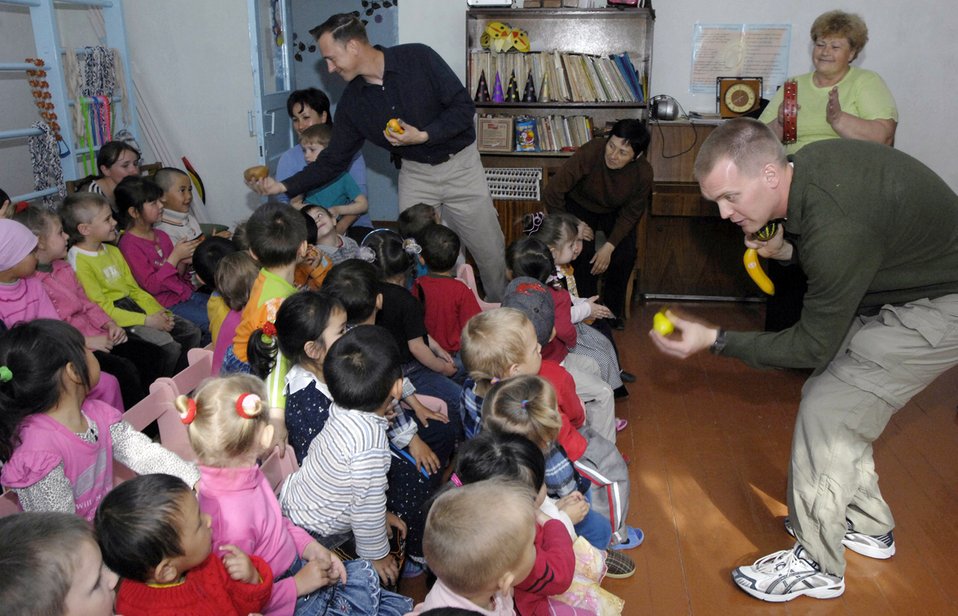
Band members connect with Kyrgyzstan music students

Staff Sgt. Peter Dahlstrom and Master Sgt. Rick Thorp hand out fruits and vegetables the students March 26 at the village school in Vasilievka, Kyrgyzstan. U.S. Air Forces Central Band Hot Brass members performed for Manas Air Base Airmen and local villages and schools during their six-day Kyrgyzstan tour of the U.S. Central Command area of responsibility.